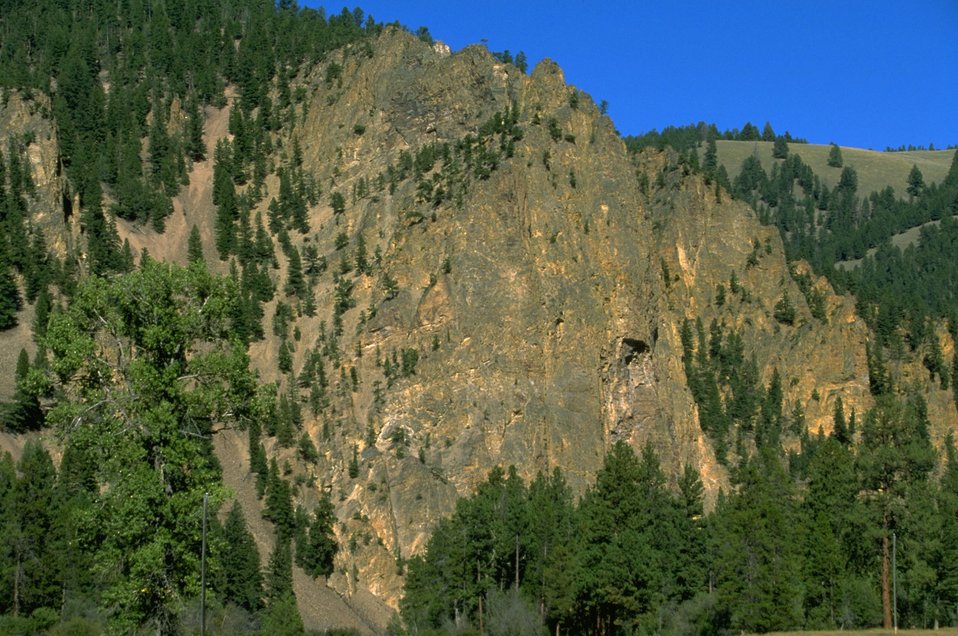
Squaw Rock ACEC (area of critical environmental concern)